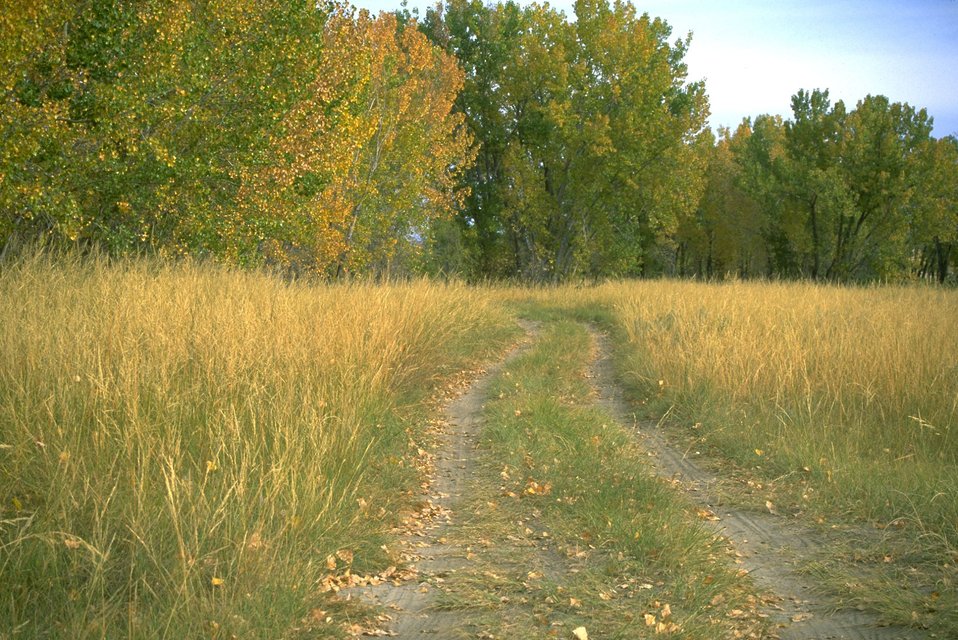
Cottonwood trees along the Yellowstone River